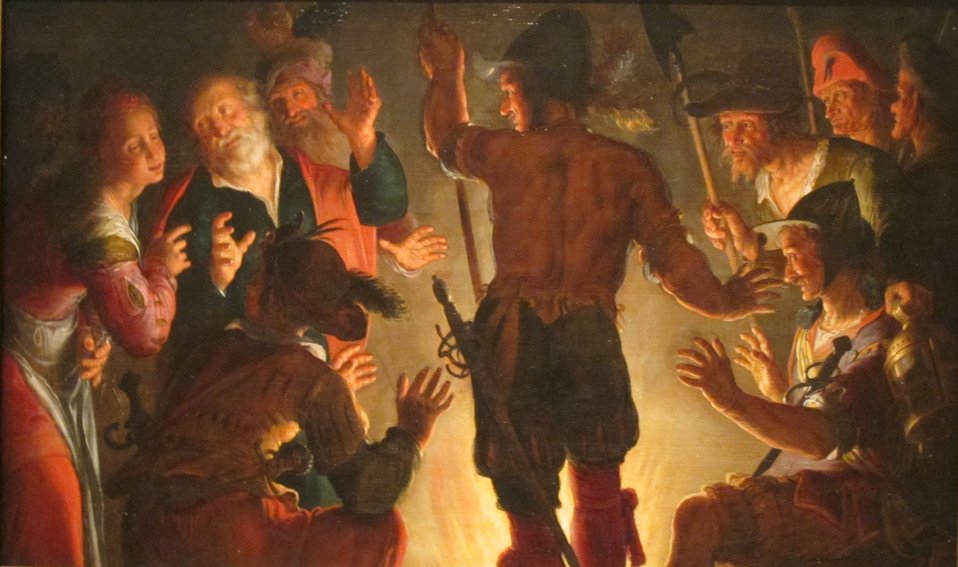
'The Denial of Peter' by Peter Wtewael, c. 1624-28